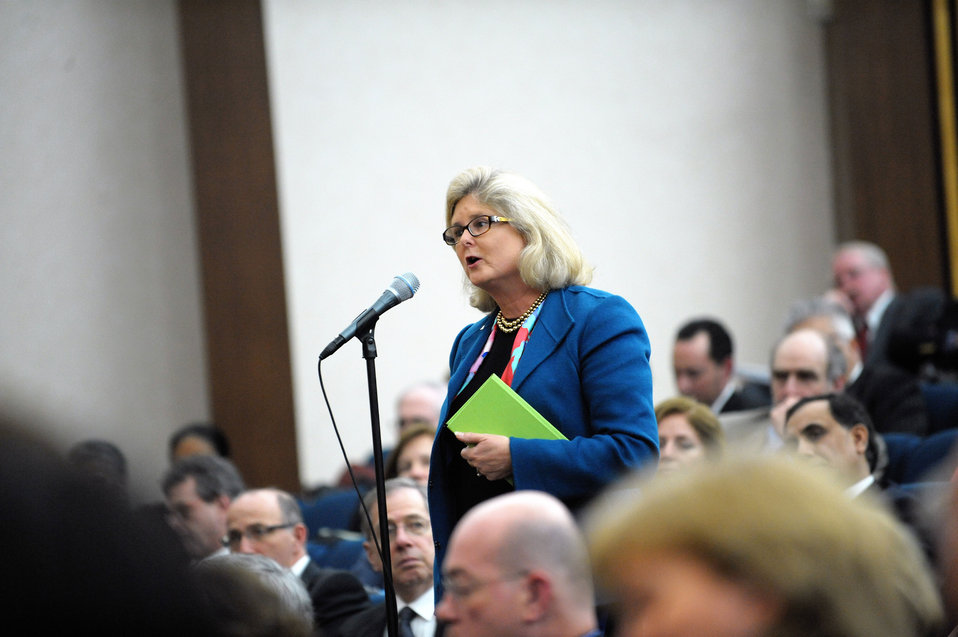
An Ambassador poses a question at the Town Hall during the 2011 Global Chiefs of Mission Conference at the U.S. Department of State in Washington, D.C., on February 3, 2011.